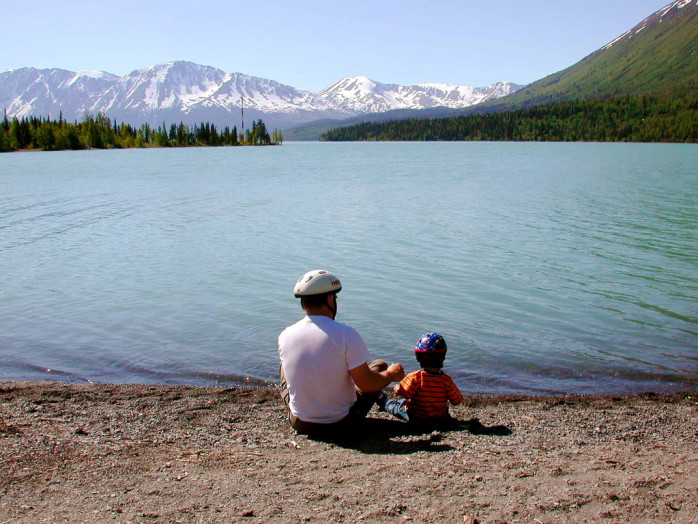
Father's Day at Kenai

Kenai National Wildlife Refuge